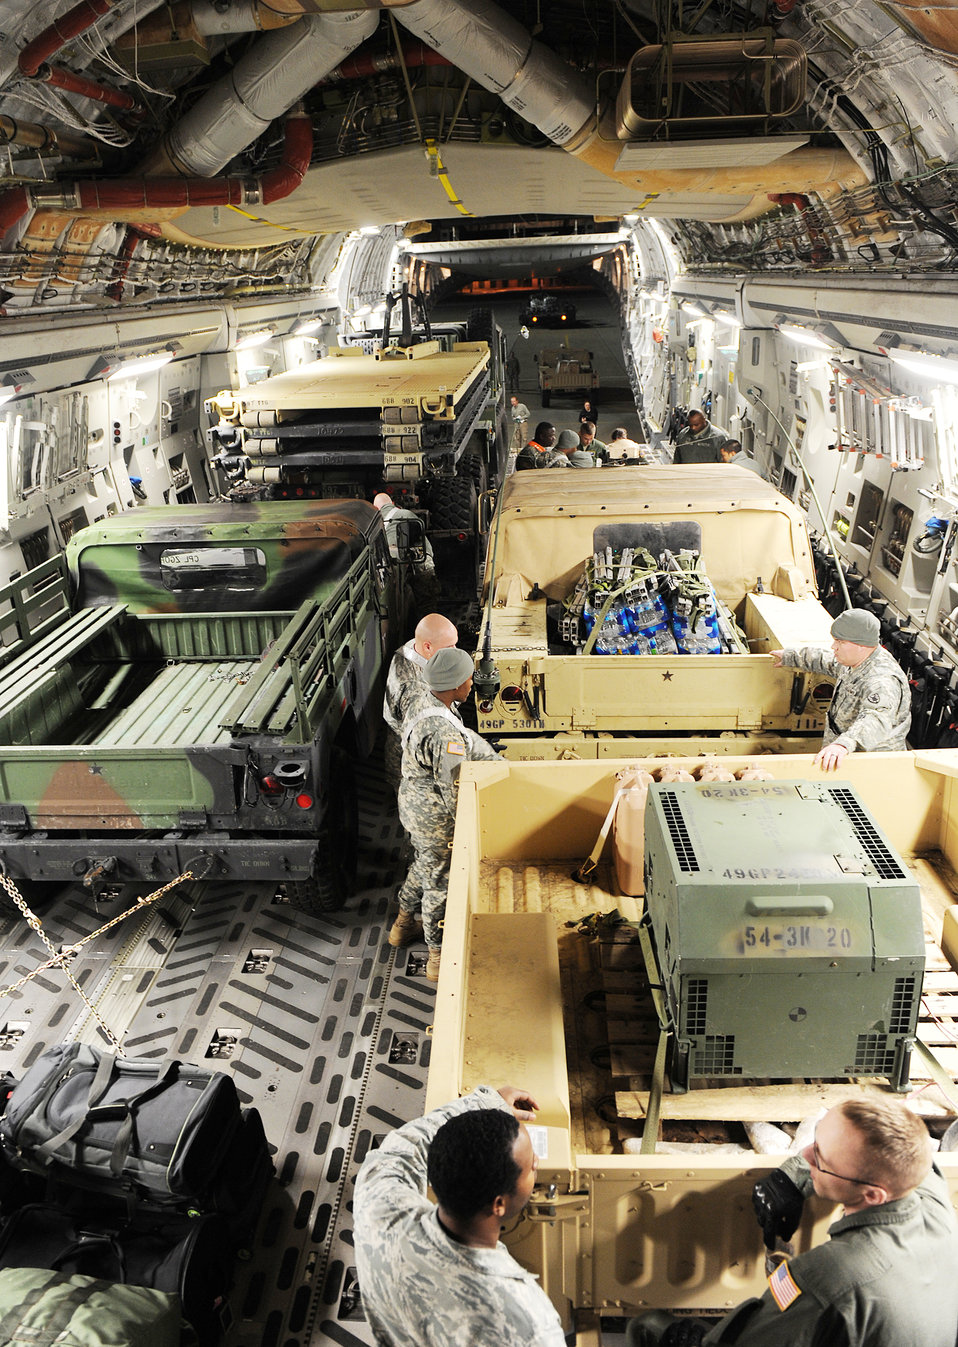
United Response

Personnel from Langley Air Force Base, Va., and Fort Eustis, Va., work together to load a C-17 Globemaster III from the 512th Airlift Wing, Dover Air Force Base, Del., Jan. 19, 2010, at Langley AFB. This was part of Operation Unified Response.